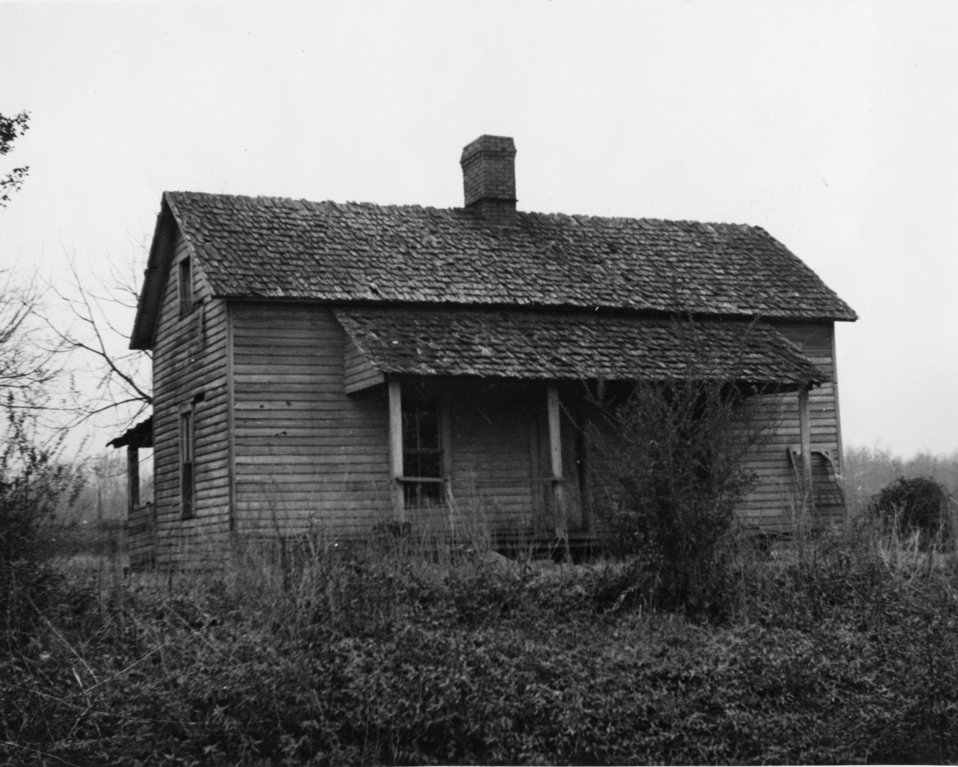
Early settlers at Oak Ridge